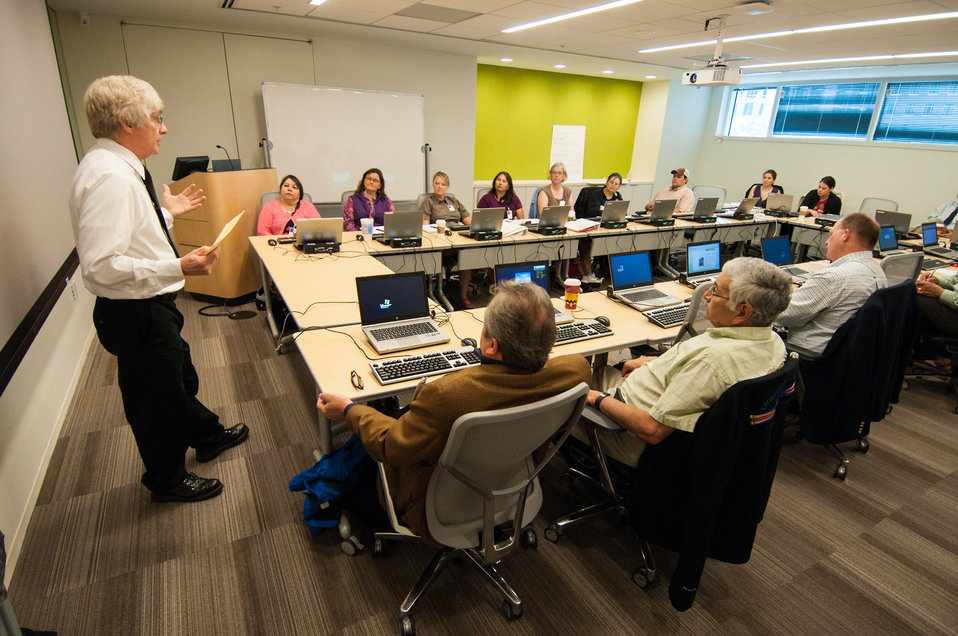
U.S. Department of Agriculture (USDA) National Institute of Food and Agriculture (NIFA) Strategic Tribal College Competitive Grant Programs Program Leader Tim Grosser focuses on the over 100 competitive grant programs available to Tribal Colleges and University’s and the work performed with NIFA Endowment Grants at the USDA 2013 Land-Grant Development Tribal Fellows Program held in Washington, D.C. on Monday, Jun.03, 2013.